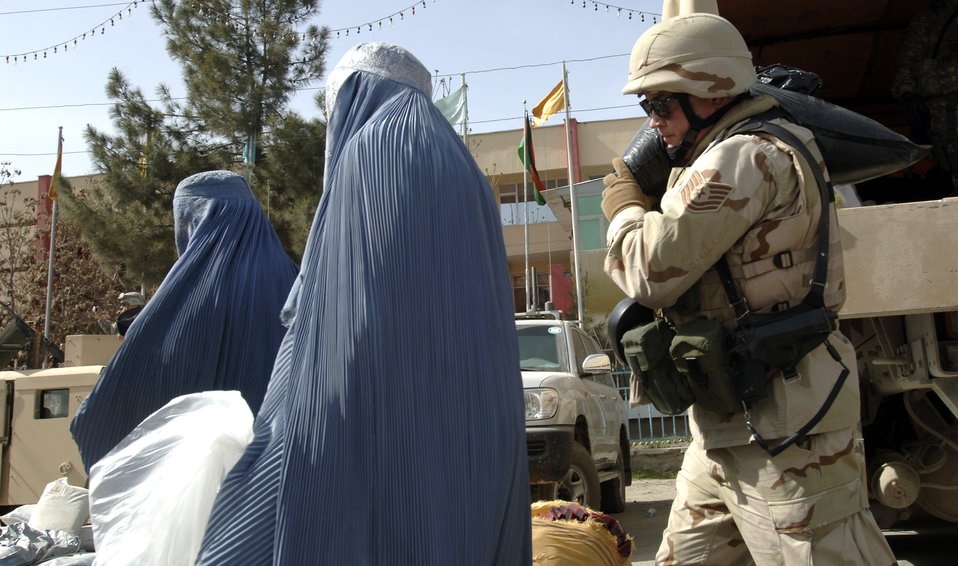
Relief for Kabul flood victims

Tech. Sgt. John Asselin carries a bag of supplies April 10 for flood victims in Kabul, Afghanistan. Training Assistance Group servicemembers from Camp Alamo coordinated food distribution efforts to supply flood victims in Kabul.